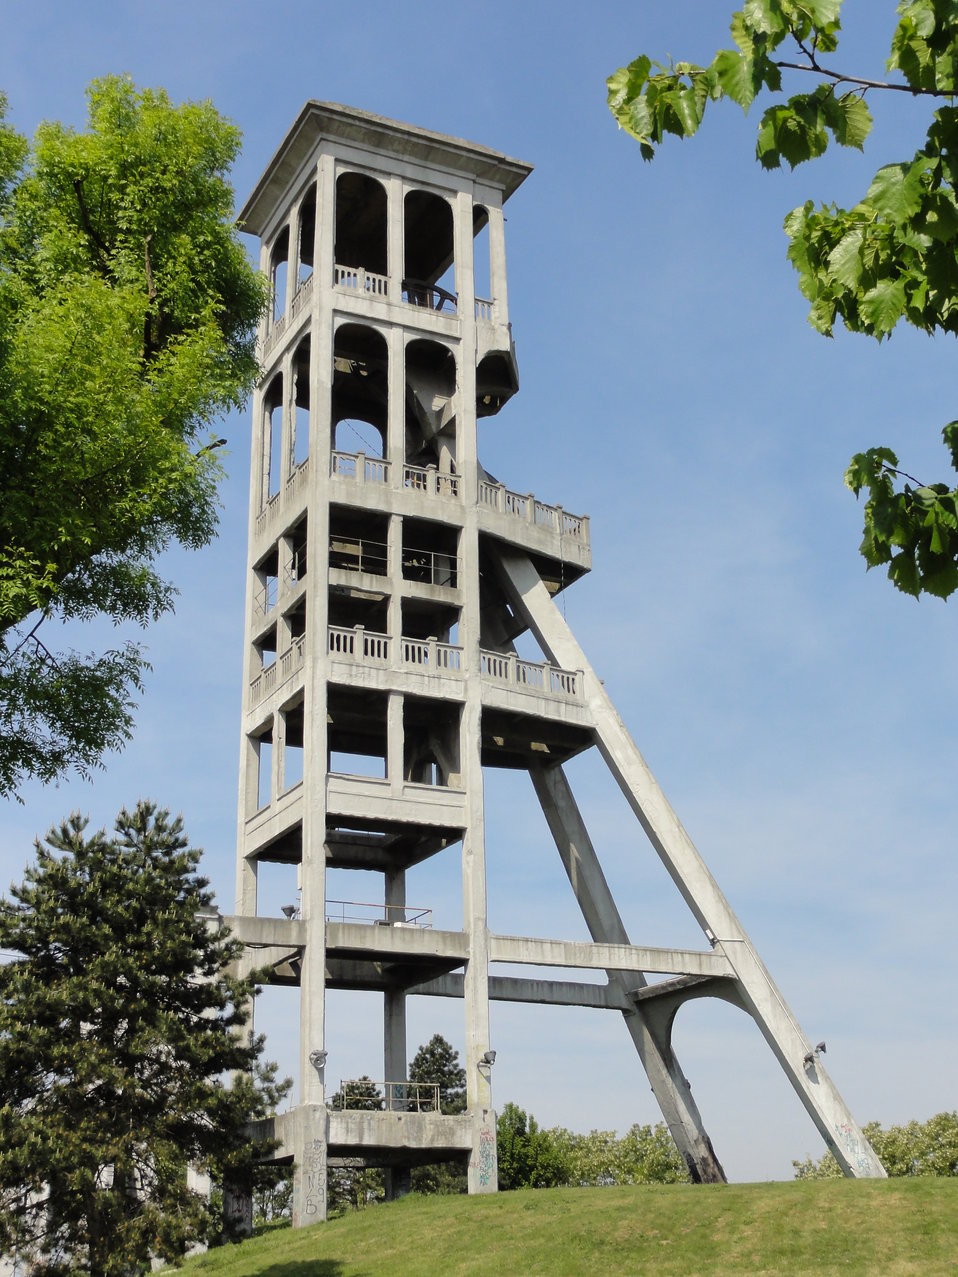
Fran√ßais†: La Fosse Dutemple de la Compagnie des mines d'Anzin √©tait un charbonnage constitu√© de deux puits situ√© √† Valenciennes, Nord, Nord-Pas-de-Calais, France.